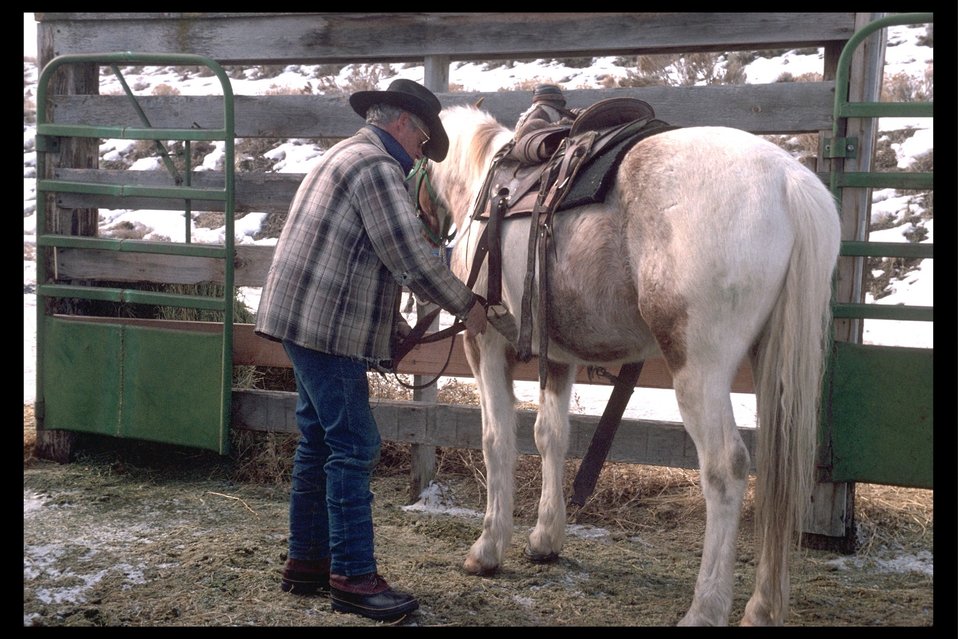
Horse wrangler at Burns wild horse corrals. Gary Rose saddles up working horse.